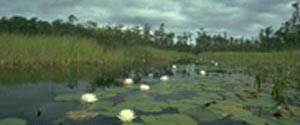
Okefenokee day lillies

Okefenokee National Wildlife Refuge, GA